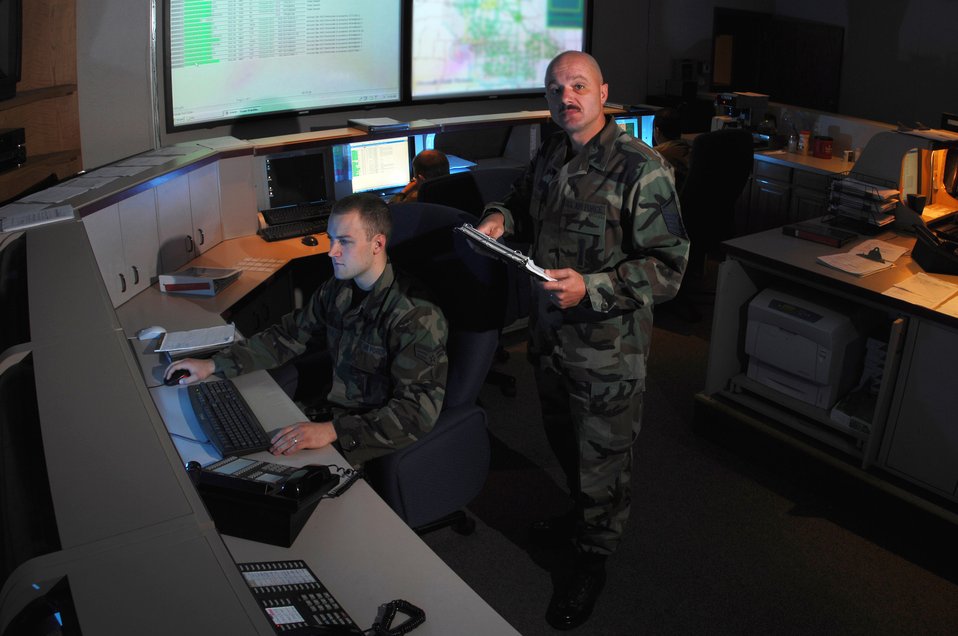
Sergeant dispatching maintainers on Air Force birthday

Master Sgt. Robert Potter stands in the center of the 91st Space Wing?s Missile Operations Center at Minot Air Force Base, N.D., on Sept. 18. Sergeant Potter is the superintendent of the maintenance operations flight.